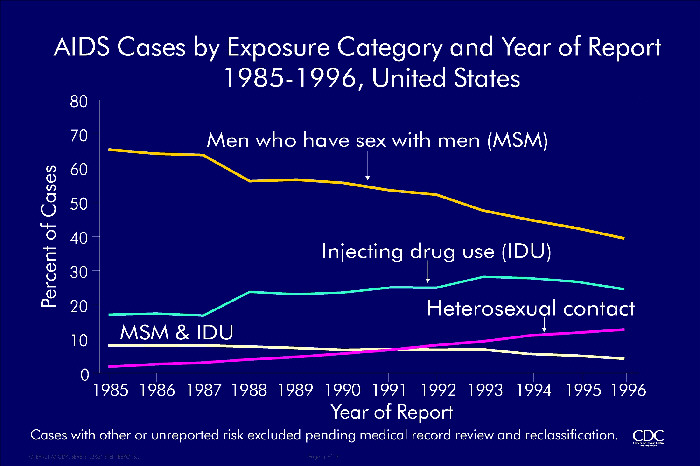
AIDS Cases by Exposure Category and Year of Report 1985-1996, United States